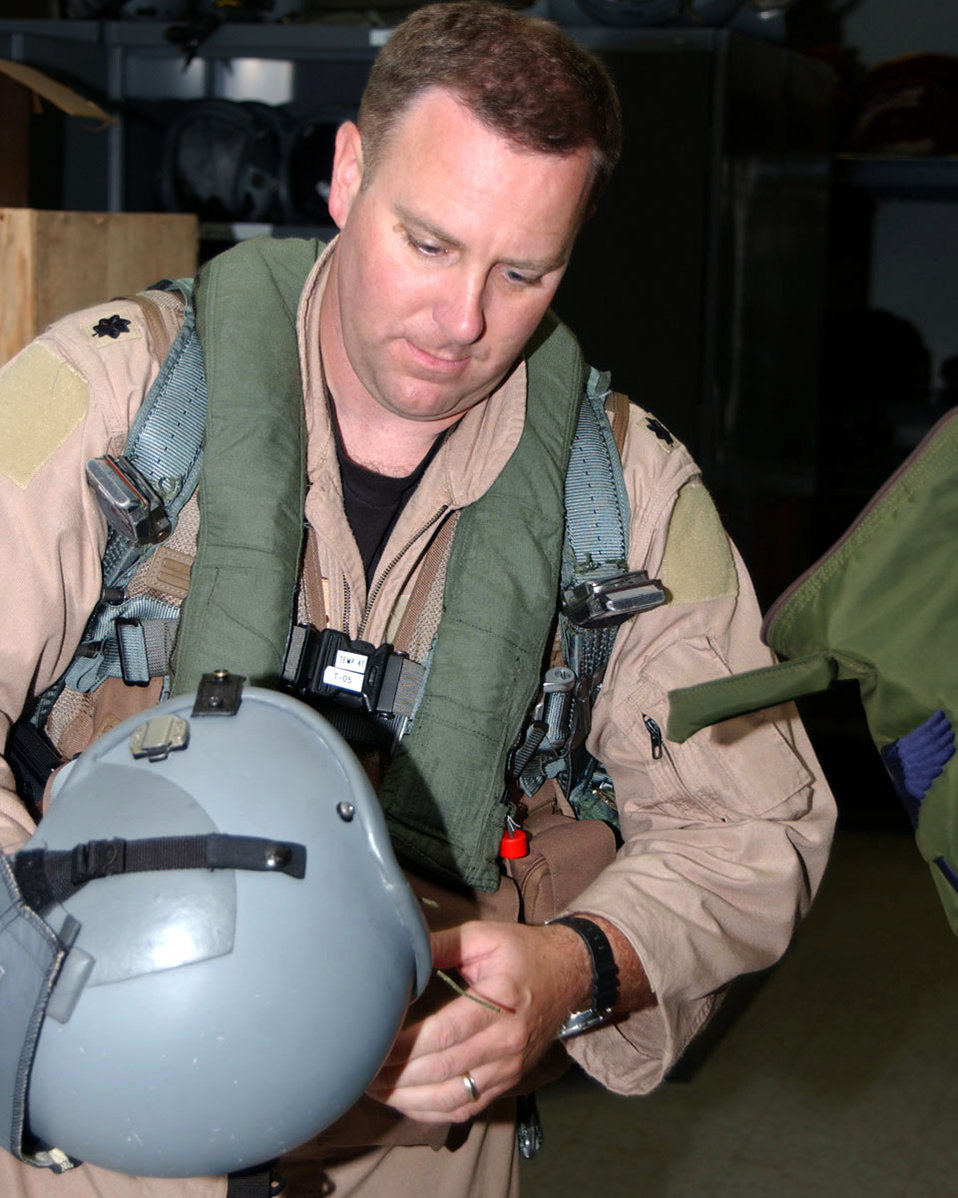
Checking it out

OPERATION ENDURING FREEDOM -- Lt. Col. Dave Garrett inspects his life-support equipment before heading to his aircraft to begin a mission. Colonel Garrett is a B-1 Lancer pilot and assistant director of operations for 37th Expeditionary Bomb Squadron.